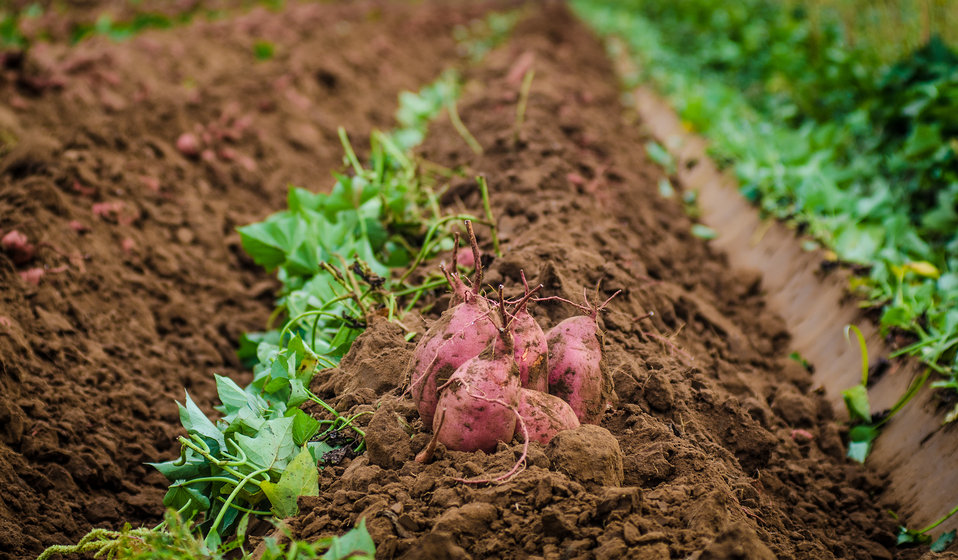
Large sweet potatoes grown underground, are first plowed up, then migrant workers delicately lift them to the top of the soil mound, and sort the potatoes according to size at Kirby Farms in Mechanicsville, VA on Sep. 20, 2013. Kirby Farms is a third-generation family farm that covers 500 acres, and generates produce and grains on a year-around operation. Please see the photoset description for more information about this farm operation.